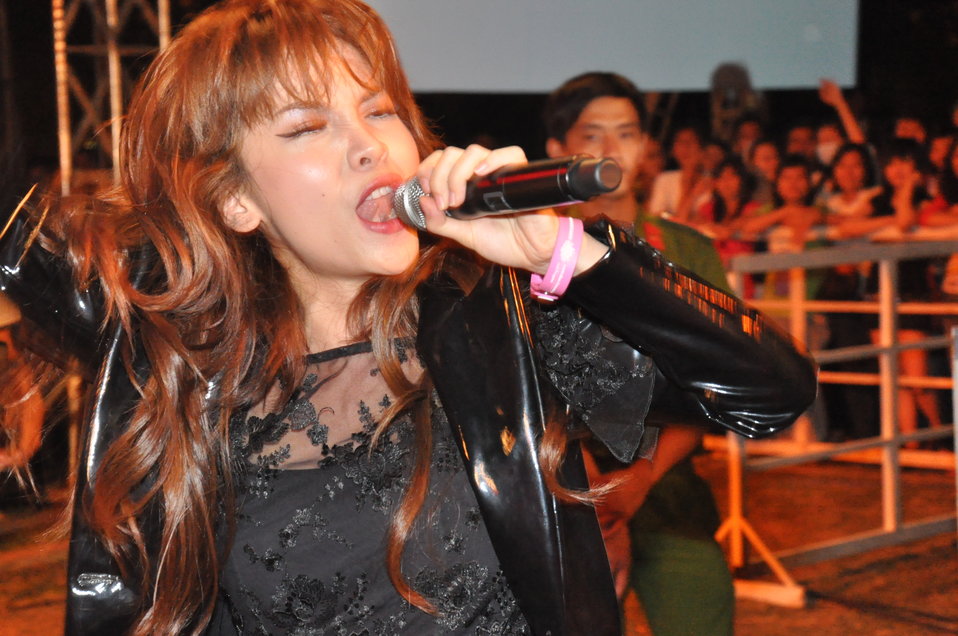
USAID and MTVEXIT concert in Can Tho

Concert in Can Tho against human trafficking, April 10, 2010